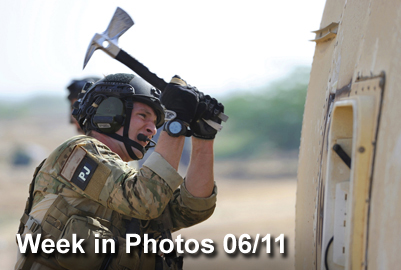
Week in Photos

Air Force Week in Photos for June 11, 2010, highlights photos from around the Air Force. In this photo by Master Sgt. Jeremiah Erickson, a pararescueman cuts his way into the